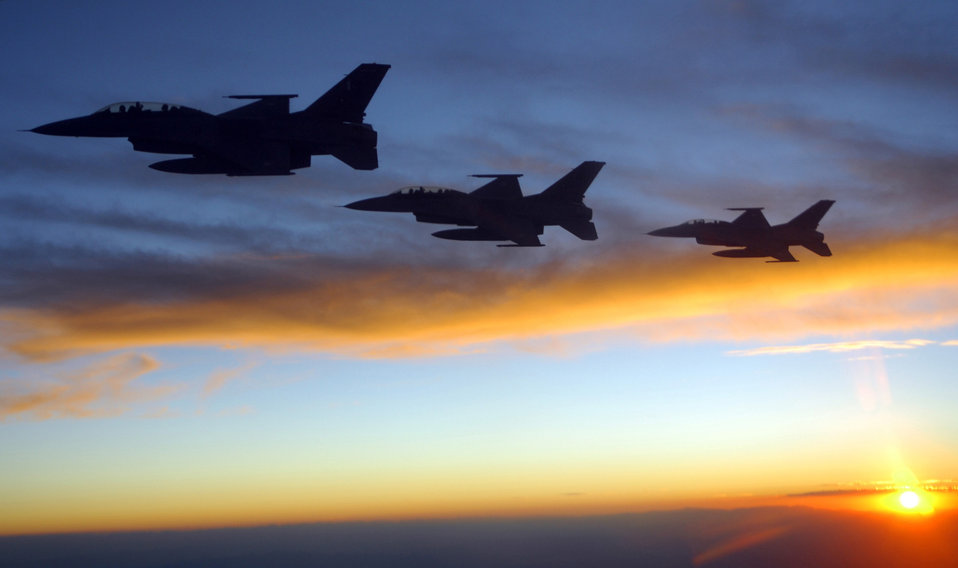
PAF at Red Flag

F-16s from the Pakistan Air Force fly near a KC-135 Stratotanker after refueling during an Exercise Red Flag mission July 21, 2010, at Nellis Air Force, Nev. Approximately 100 Pakistan Air Force F-16B pilots and support personnel are participating in Red Flag.